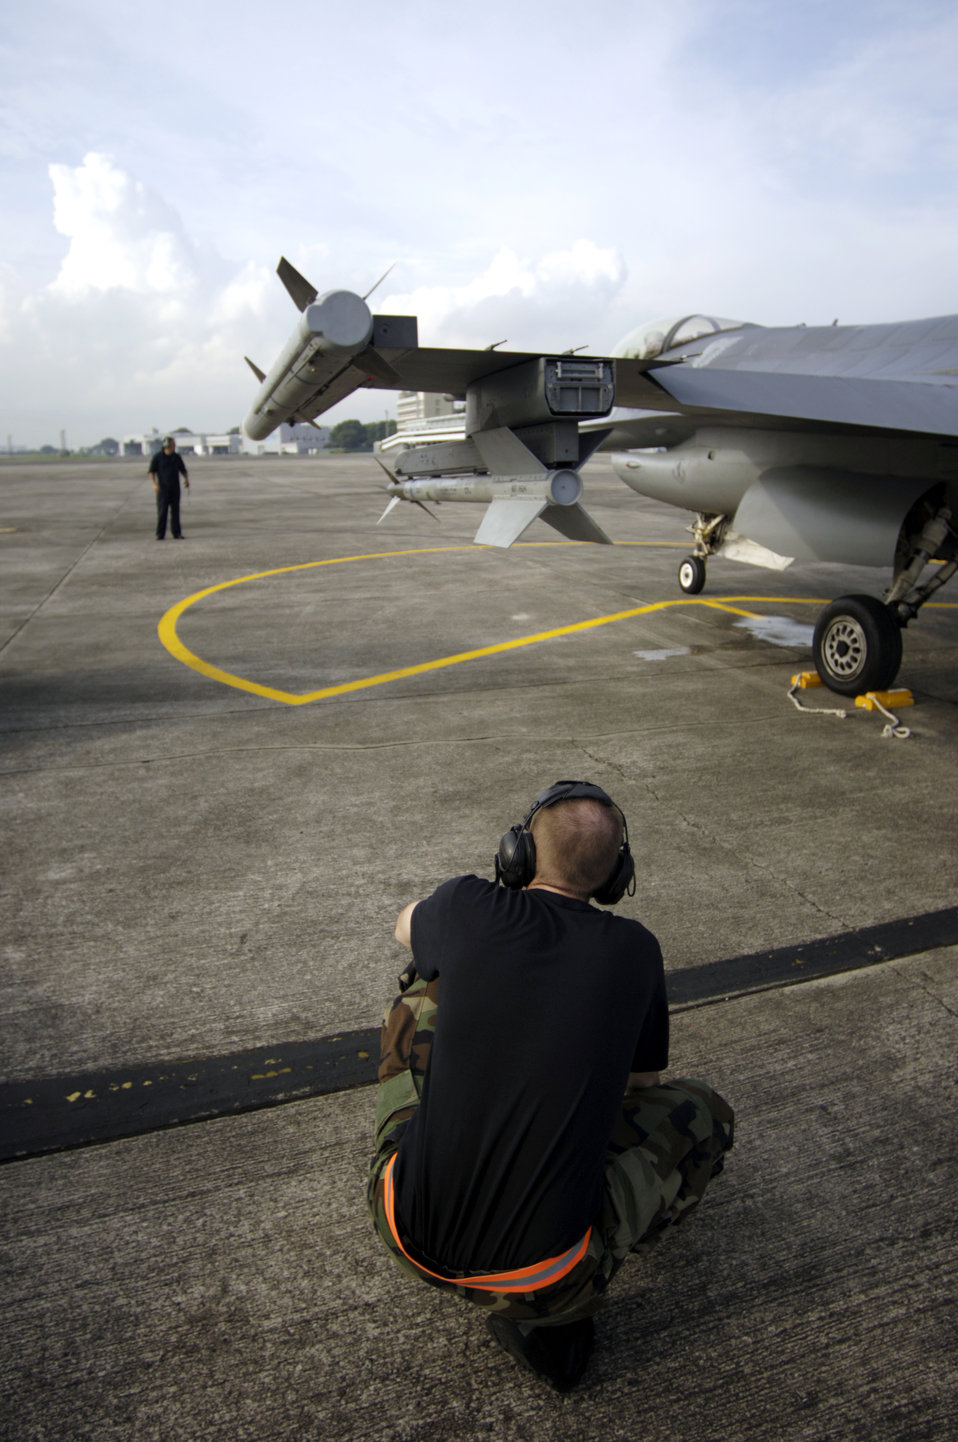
Commando Sling

PAYA LEBAR AIR BASE, Singapore -- Crew hhiefs from 14th Fighter Squadron, Misawa, Japan, prepare to launch their F-16 Fighting Falcon for a mission at Paya Lebar Air Base, Singapore, during Exercise Commando Sling. The annual Commando Sling series began in 1990 to provide combined air combat training for U.S. Air Force and Singapore Air Force fighter units. The exercise enables units to sharpen air combat skills, improve procedures for sustained operations at a non-U.S. base, and promote closer relations between the two air forces and nations.